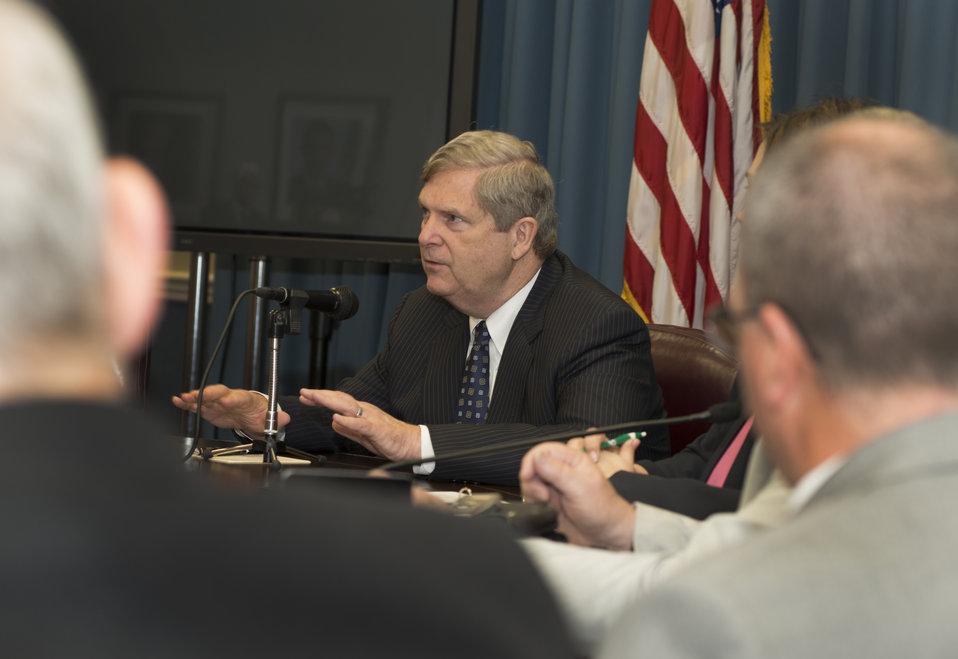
Agriculture Secretary Tom Vilsack meets with the National Association of Farm Broadcasters (NAFB) in the Williamsburg Room of the Whitten Building, U.S. Department of Agriculture (USDA) in Washington, D.C. on Tuesday, May 6, 2014.